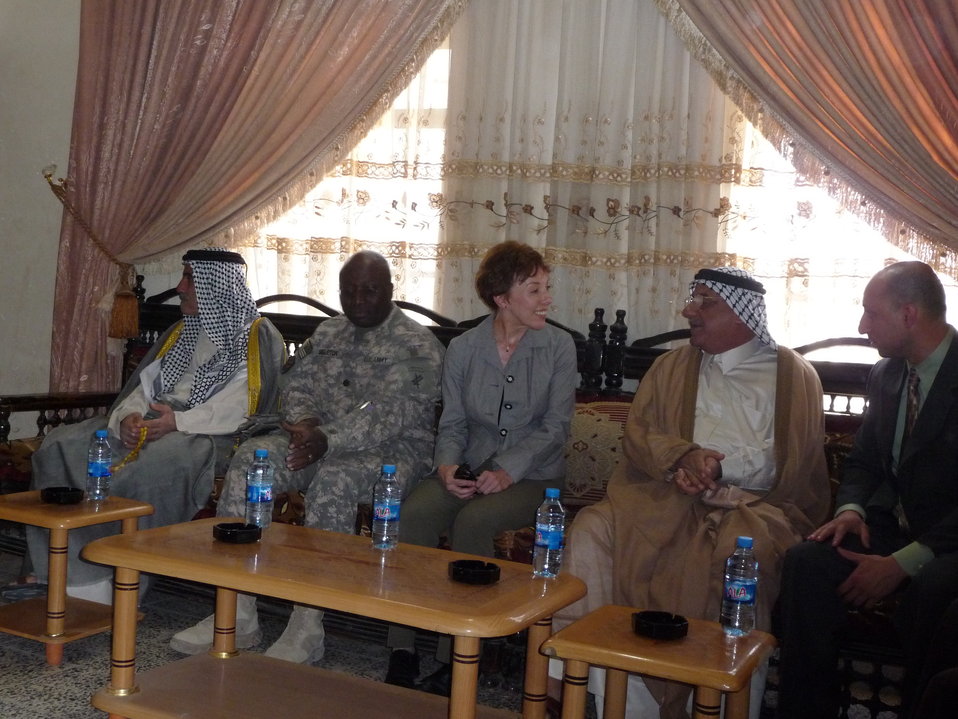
PRT Leaders Meet With Local Officials

PRT Diyala Deputy Team Leader LTC Ricardo Singleton and Team Leader Lisa Piascik meet with local officials in Baqubah, Diyala, Iraq, October 2009.